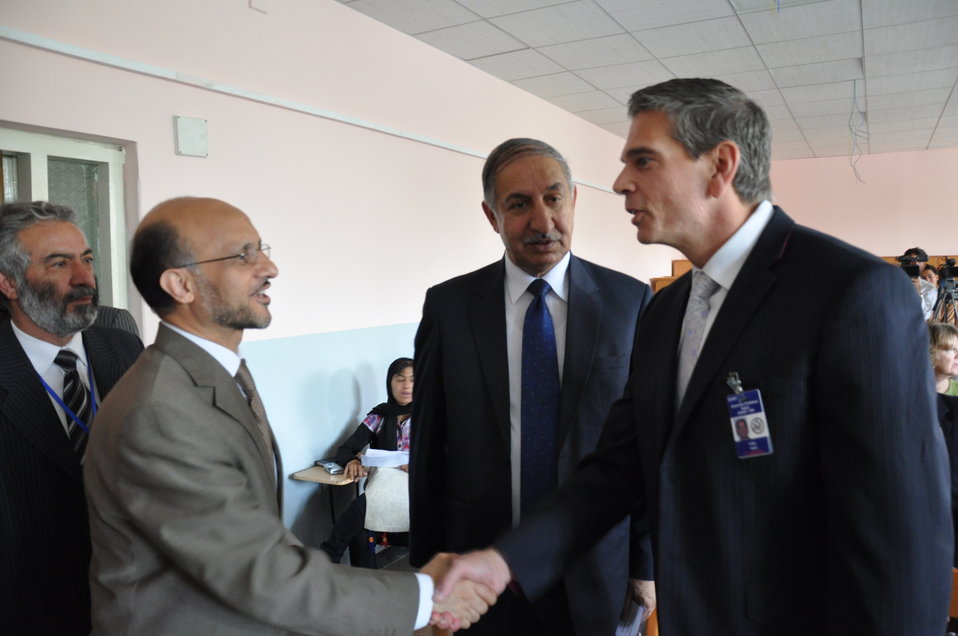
Kabul University Herbarium